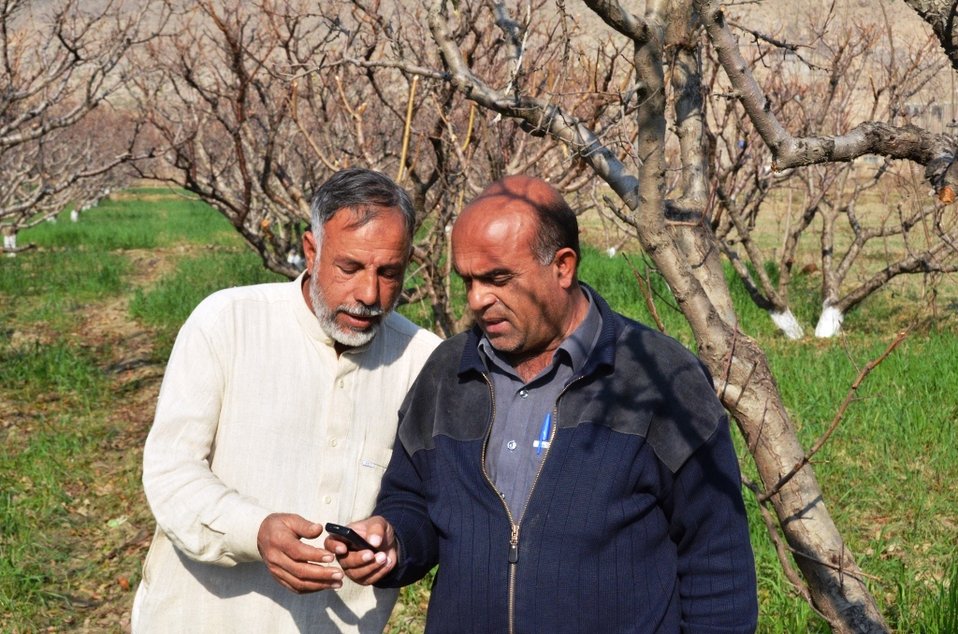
A subscribed farmer is sharing information with a non-subscribed farmer in his community.

Peach and Potato farmers in Swat are receiving text alerts on their mobile phones which is helping them improve their farming practices. USAID catalyzed behavior changes leading to sustainable improvements in the economic lives of farmers in Swat.